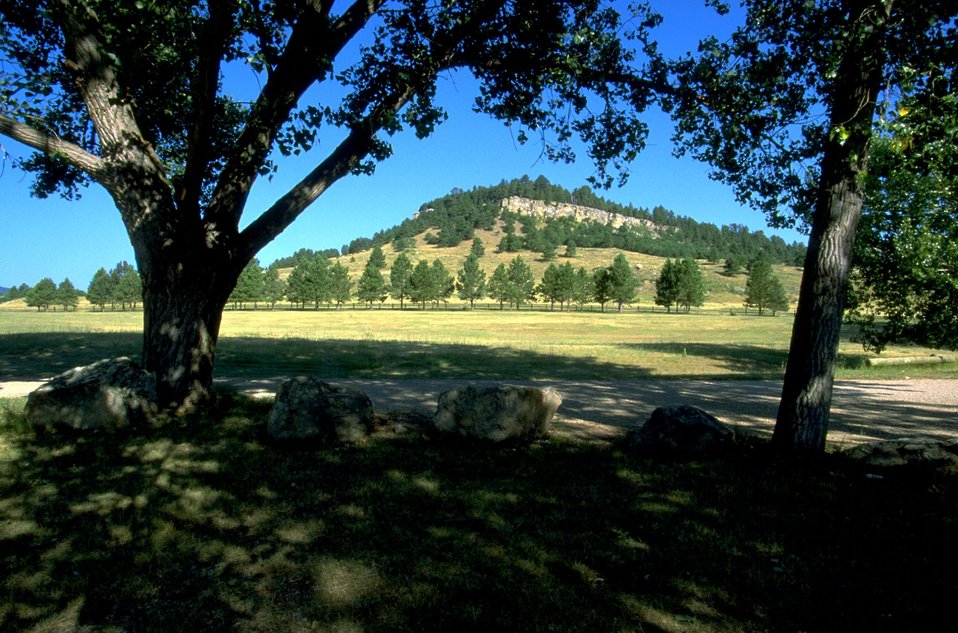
Alkali Creek Trailhead looking north at the south end of Fort Meade